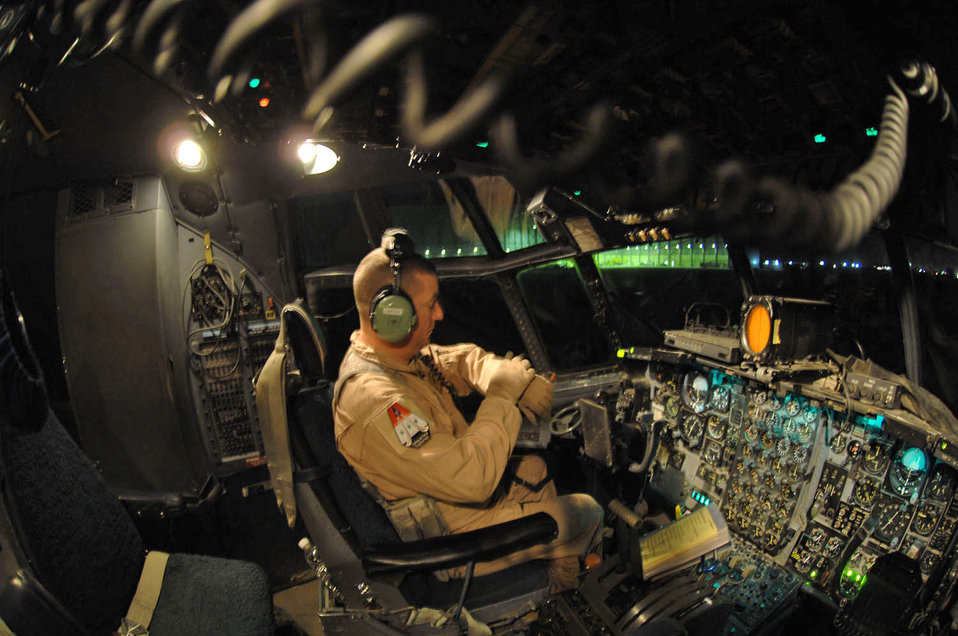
Airmen aid in Iraqi election ballot transport

Master Sgt. Louis Carter conducts preflight tests inside the cockpit of an Iraqi C-130E Feb. 2 at Sather Air Base, Iraq. The C-130 was one of two aircraft on its way to pick up Iraqi election ballot boxes. Sergeant Carter is deployed from the 550th Special Operations Squadron at Kirtland Air Force Base, N.M. Sergeant Carter is a 321st Air Expeditionary Airlift Squadron combat aviation adviser.